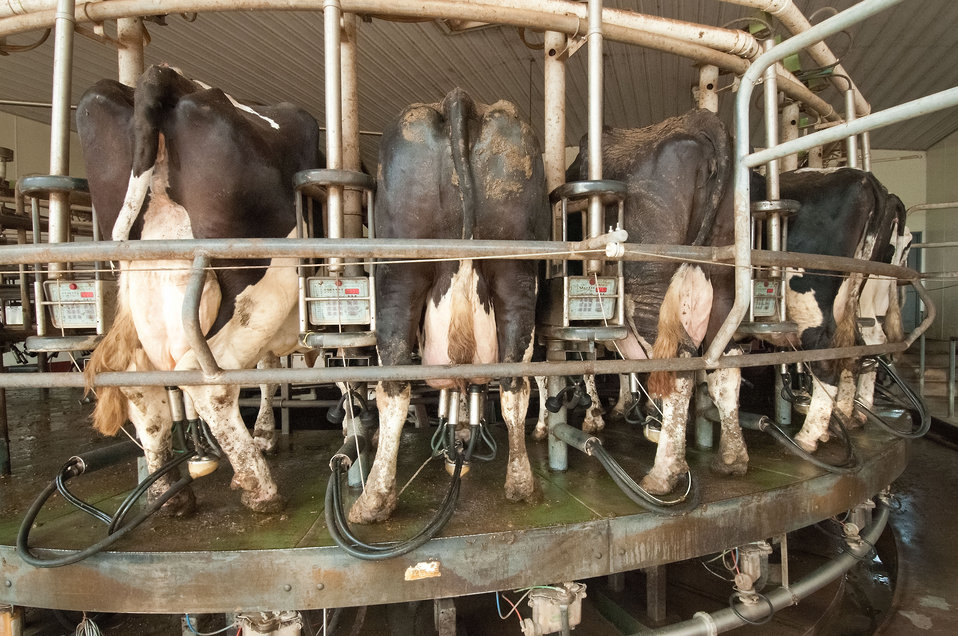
Holstein dairy cattle being milked at Pennwood Dairy Farms owned and operated by the Stoltzfus family in Berlin, PA. The cattle produce the source material, manure, for the anaerobic digester the dairy uses to produce energy for the dairy. The digester produces one million kilowatt hours; half of the energy needs of the farm, the other five hundred thousand kilowatt hours are sold back to the grid. An anaerobic digester is a component of a waste management system that provides biological treatment in the absence of oxygen. The digester captures biogas for energy production, manages odors, reduces the net effect of greenhouse gas emissions, and reduces pathogens. The anaerobic digester practice is part of a planned conservation management system that manages manure and/or comprehensive nutrient management system. Agriculture Secretary Tom Vilsack visited the dairy on Tuesday, July 17, 2012. During his visit Secretary Vilsack highlighted the U.S. Department of Agriculture’s (USDA) energy efficiency programs and announced a new effort to help rural consumers make affordable, energy-efficient improvements to their homes and businesses.